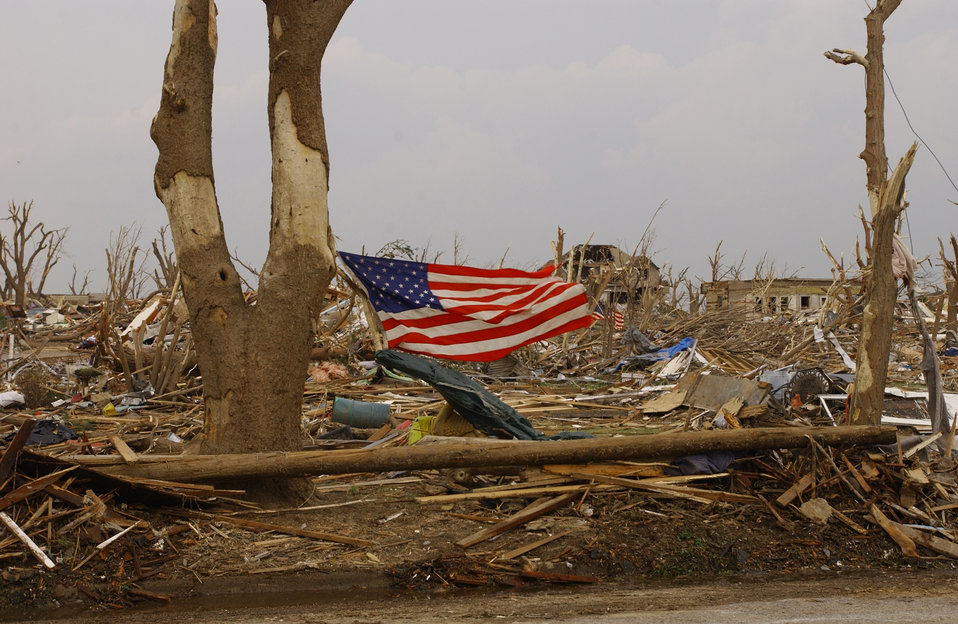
National Guard cleaning up devastated Kansas town

An American flag flies in Greensburg, Kan., after an F5 tornado hit the town May 4. Around 500 Army and Air National Guardmembers are in Greensburg removing debris, providing security, generating power, preparing food and performing other disaster relief functions.